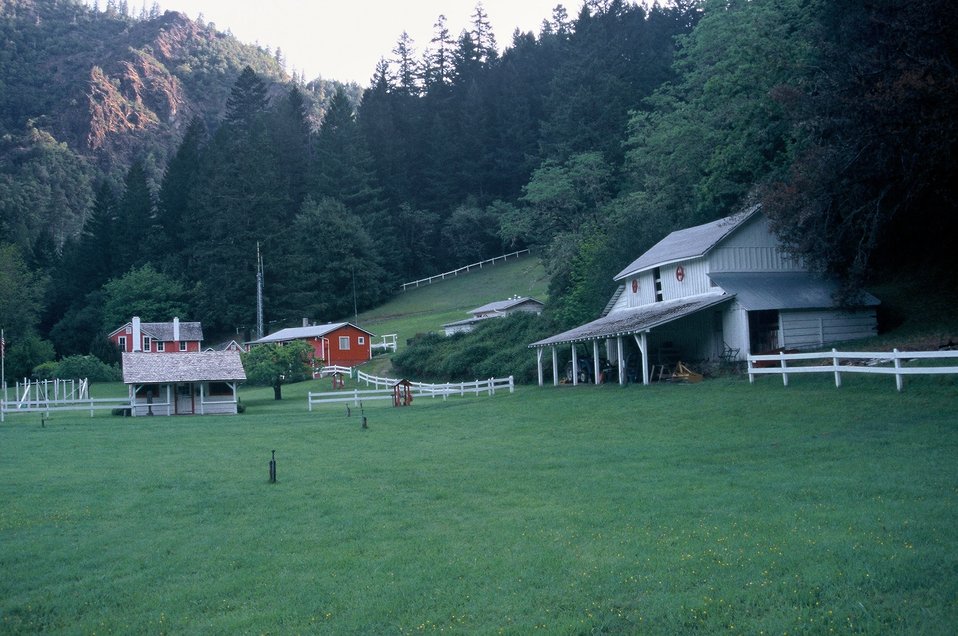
Wild section of the Rogue River from Grave Creek to Foster Bar May 19 to May 22.